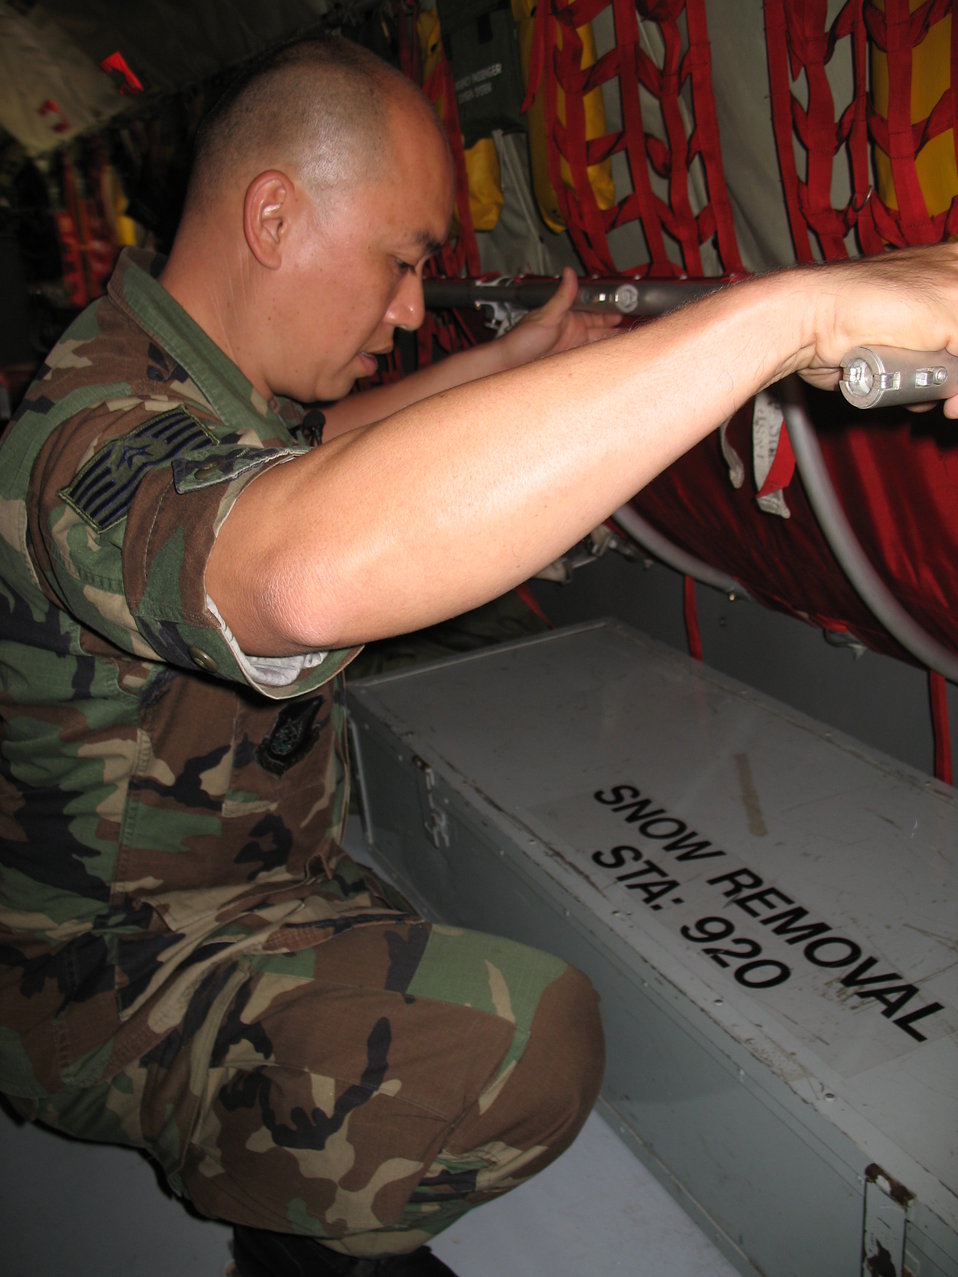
Saving initiative

Tech. Sgt. Steward Leong shows equipment that can be offlaoded as excess before a mission as part of a KC-135 Stratotanker fuel saving initiative at Hickam Air Force Base, Hawaii, Jan. 25, 2007. Sergeant Leong is a KC-135 crew chief with the Hawaii Air National Guard, 154th Aircraft Maintenance Squadron.